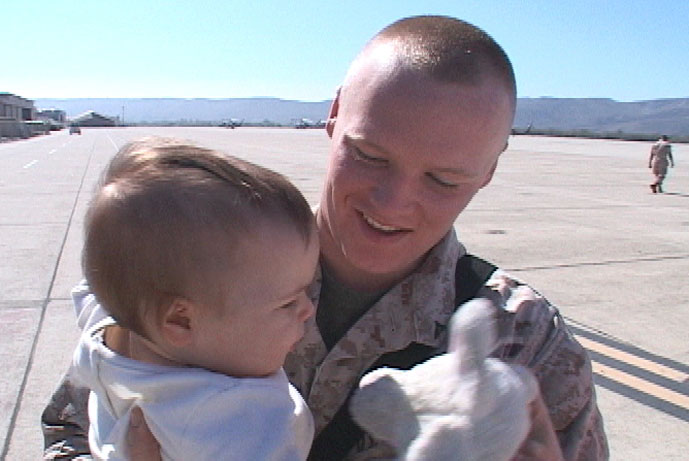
Returning home

A Marine holds his baby daughter on teh tarmac at Marine Corps Base Camp Pendleton California March 15. The Marine was a member of the rear detachment from Marine Medium Helicopter Squadron 364 returning home following a seven month deployment to Iraq.